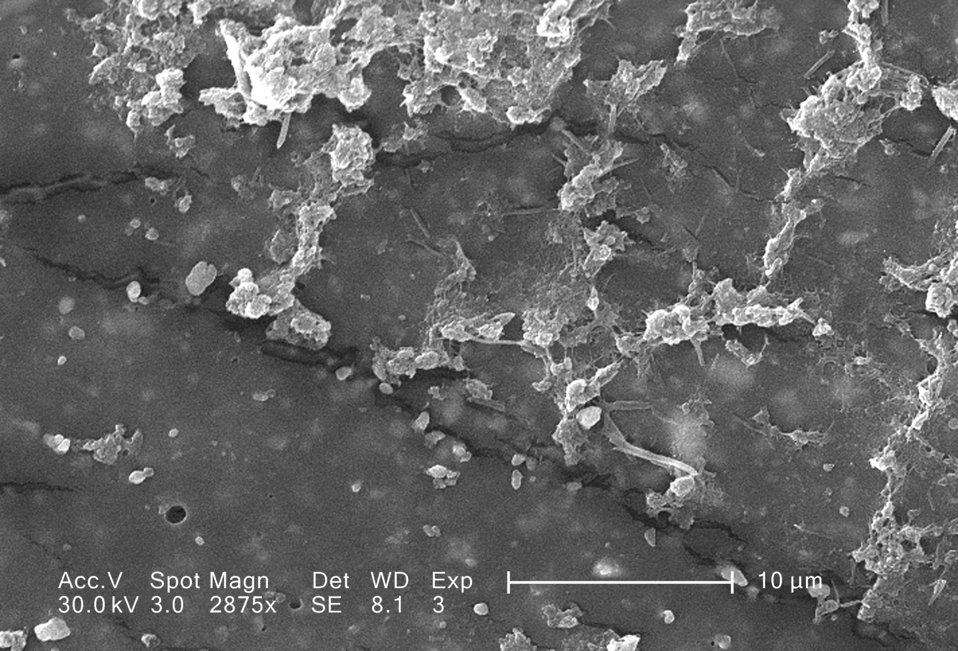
This scanning electron micrograph (SEM) depicted the accumulations of a fibrinous meshwork seen upon the luminal, i.e., inner surface of an indwelling vascular catheter; Magnified 2875x. In this instance, the indwelling catheter was a tube that was left in place creating a patent portal directly into a blood vessel.